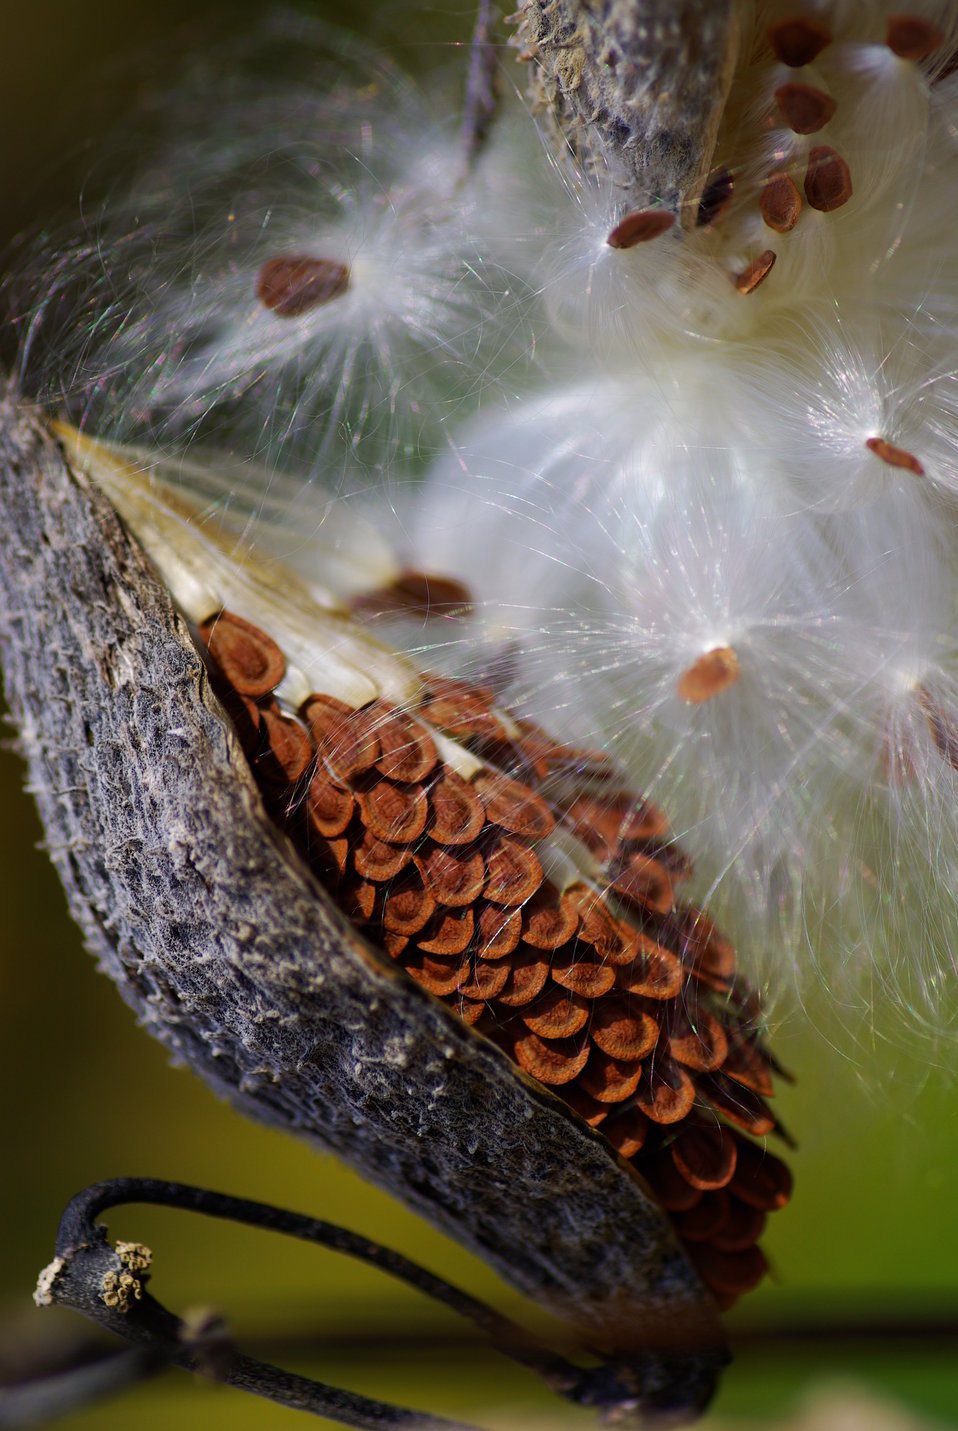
Milkweed Pod

Photographed at Morehouse Lake, NY